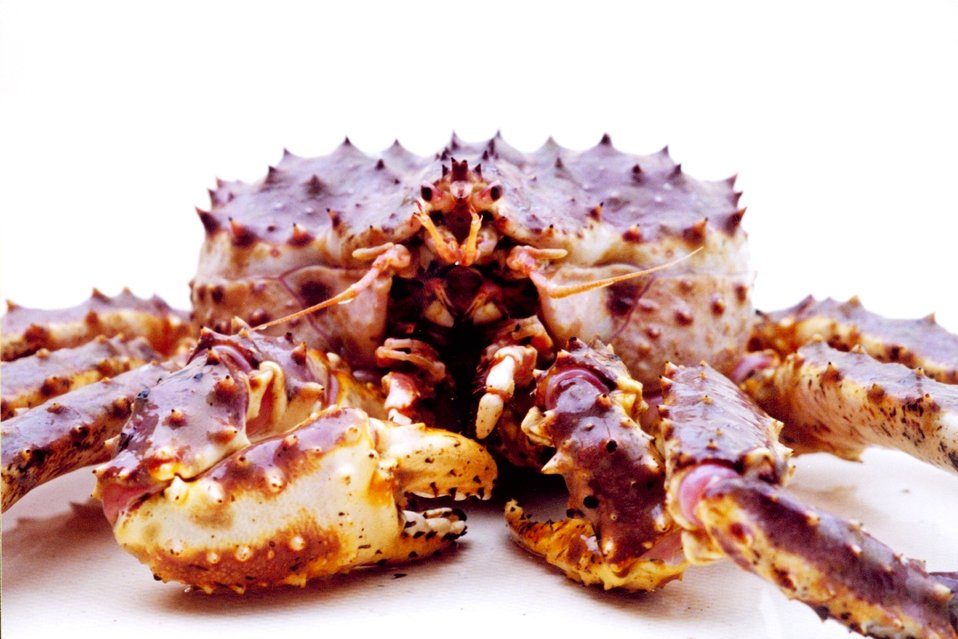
Alaska King Crab